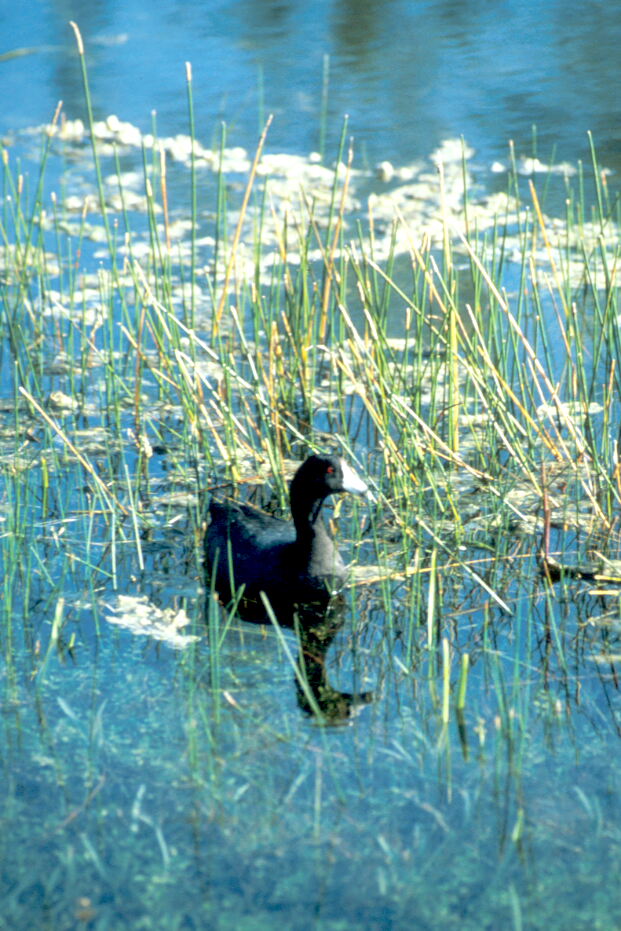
American Coot.